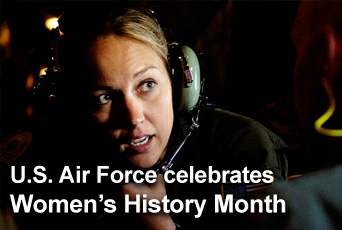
Air Force celebrates Women's History Month

Women in the Air Force are featured this month on Air Force Link with photos, media presentations and downloadable posters.